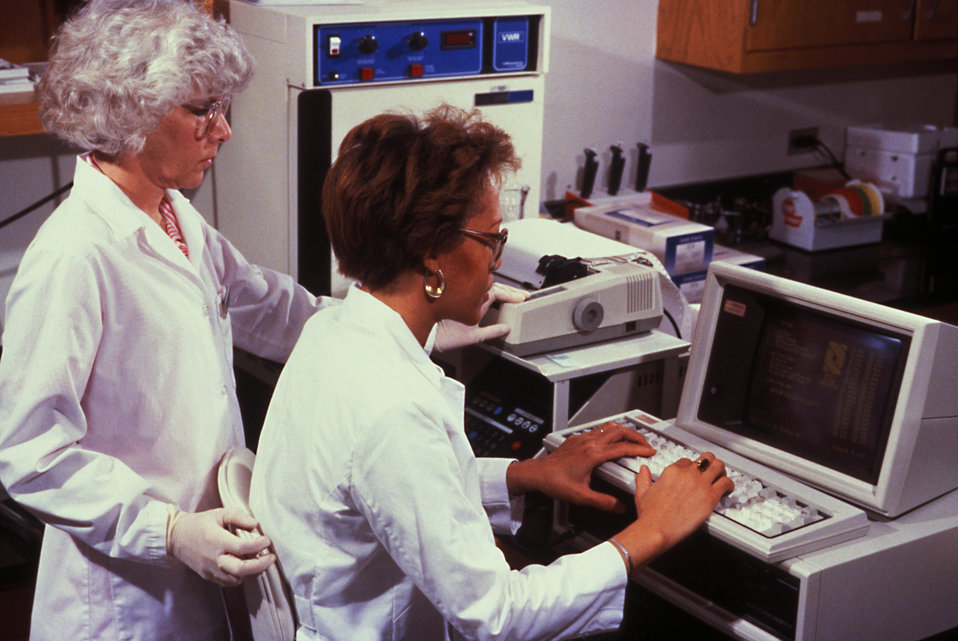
These CDC lab technicians are carrying out AIDS research during 1988 laboratory studies.